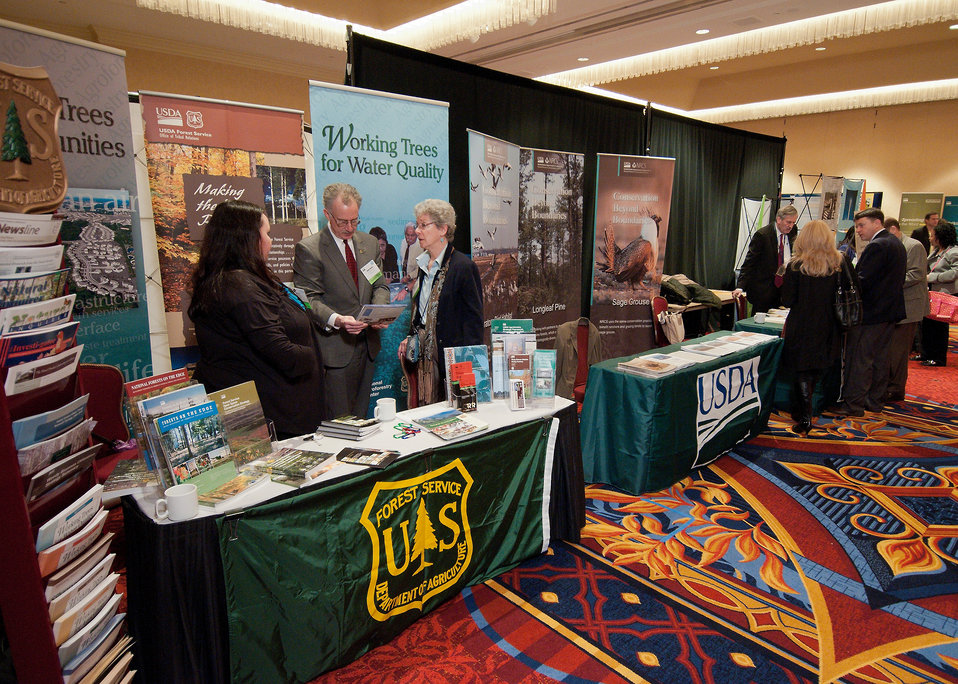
From left: Kerry Britton, Forest Service, Research, Washington, D.C.,, Andy Mason, Director, United States Department of Agriculture National Agroforestry Center, Washington, D.C., and Ericka Luna, Forest Service, Office of Tribal Relations offer information at the U.S. Forest service booth in the exhibit hall at the 2012 Agricultural Outlook Forum, “Moving Agriculture Forward, Growing, Innovating and Celebrating 150 Years” held at the Crystal gateway Marriott Hotel Arlington, Virginia, Friday, February 24, 2012. This year’s forum coincides with the 150th anniversary of the Department of Agriculture addressing economics, marketing, research, food safety, nutrition, conservation, rural development, alternative energy, trade and many other agricultural issues.